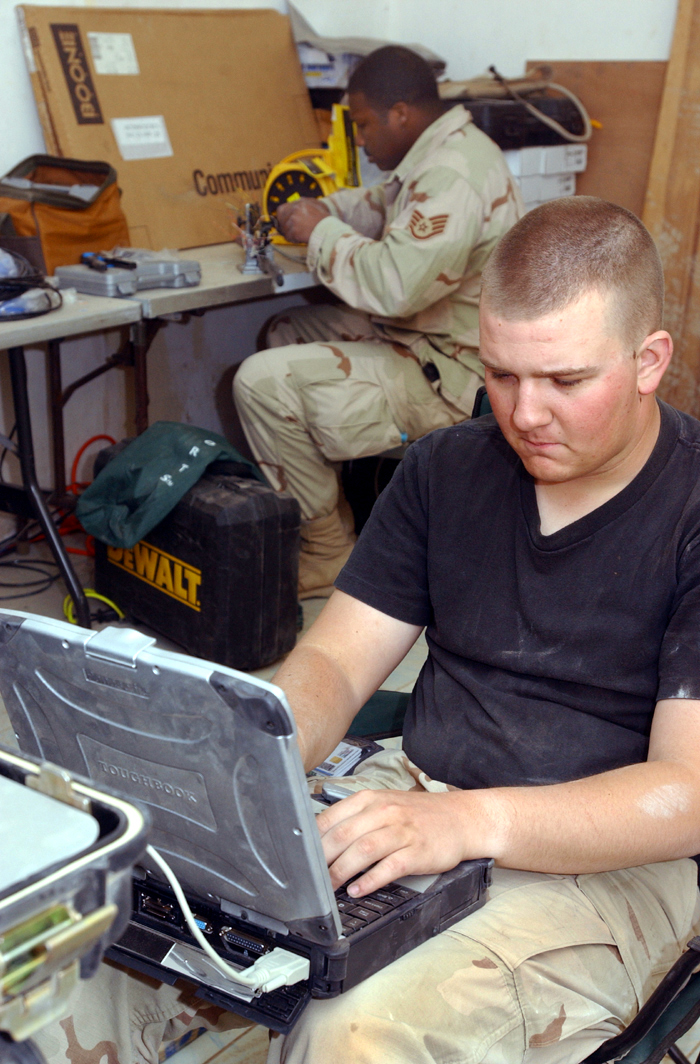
Improving communications

OPERATION IRAQI FREEDOM -- Airman 1st Class Josh Mason (foreground) and Staff Sgt. Kelvin Hawkins work in dusty and dirty conditions April 16 to set up improved communications at Tallil Air Base in southern Iraq. They are members of the 5th Combat Communications Group at Robins Air Force Base, Ga.